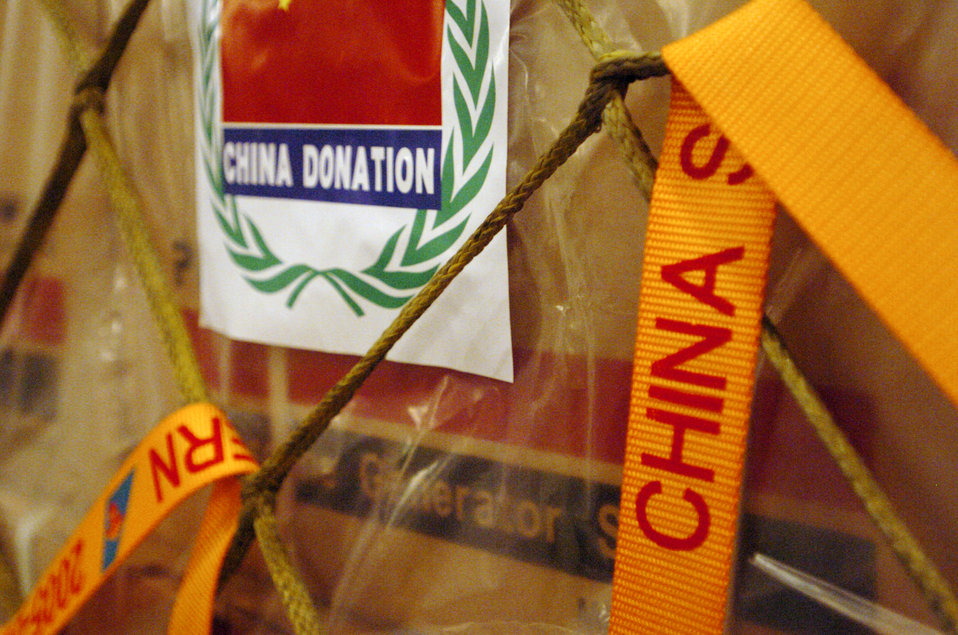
Little Rock welcomes China hurricane aid

LITTLE ROCK AIR FORCE BASE, Ark. -- A pallet of generators donated from China for hurricane flood relief awaits unloading from a Chinese 747 aircraft laden with 100 tons of humanitarian aid cargo. The aid flight arrived here Sept. 7 from Beijing with supplies that included bedding, clothing and tents.